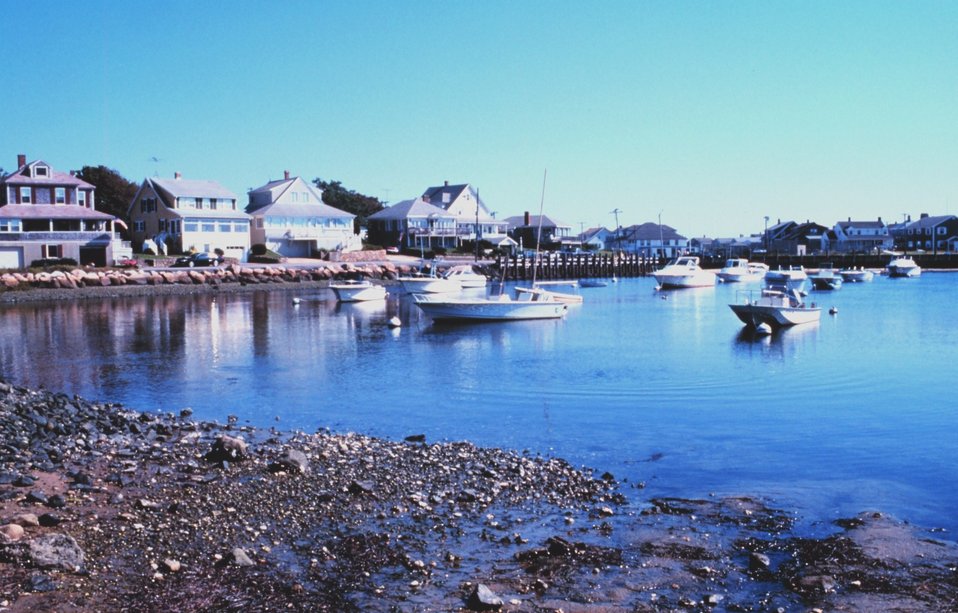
New Silver Beach area, North Falmouth